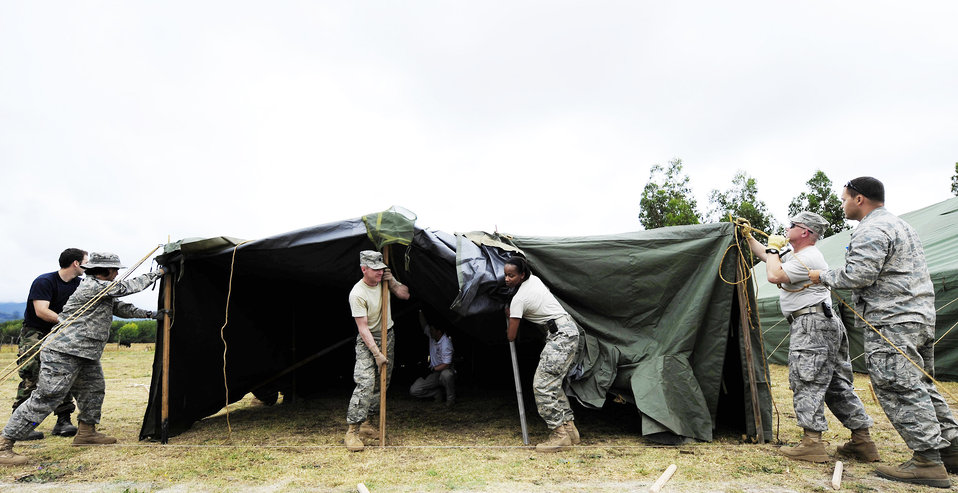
Airmen build EMEDs tents

Airmen from an expeditionary medical support team raise a tent March 23, 2010, in Angol, Chile. The EMEDS team along with members of the Chilean army built 13 shelters that will make up the hospital. The hospital will serve as a temporary facility for up to three years until a new hospital can be built in Angol.